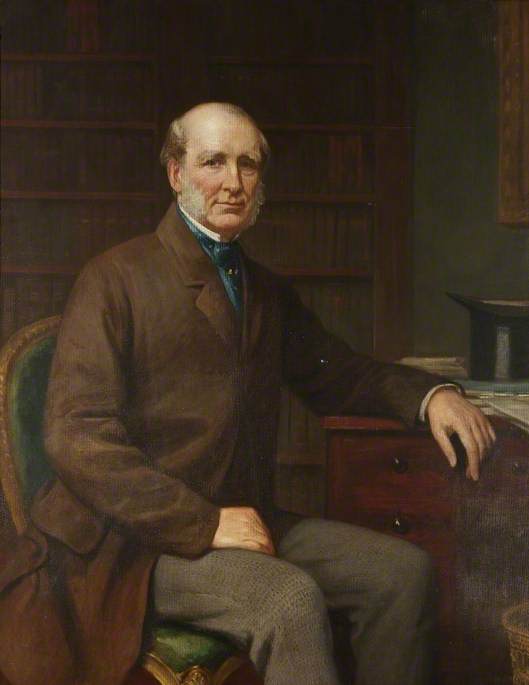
Oil portrait of Rowland Hill 2nd Viscount by Eden Upton Eddis